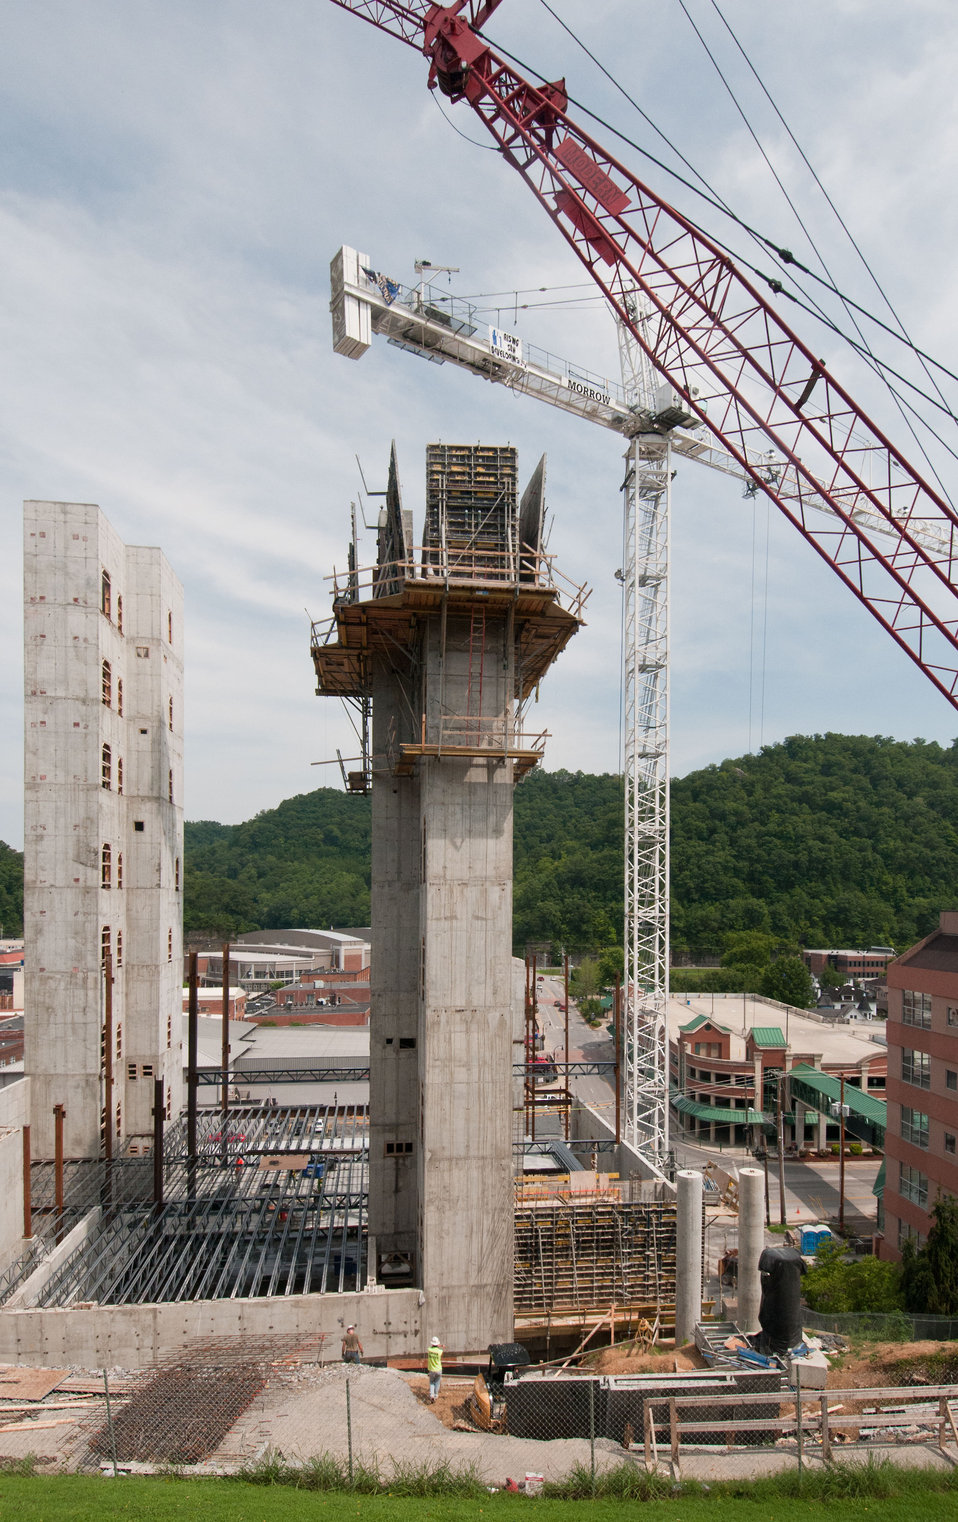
A $25 million expansion project at University of Pikeville Kentucky College of Osteopathic Medicine (UP-KYCOM), Pikeville, KY on Tuesday, July 12, 2011.